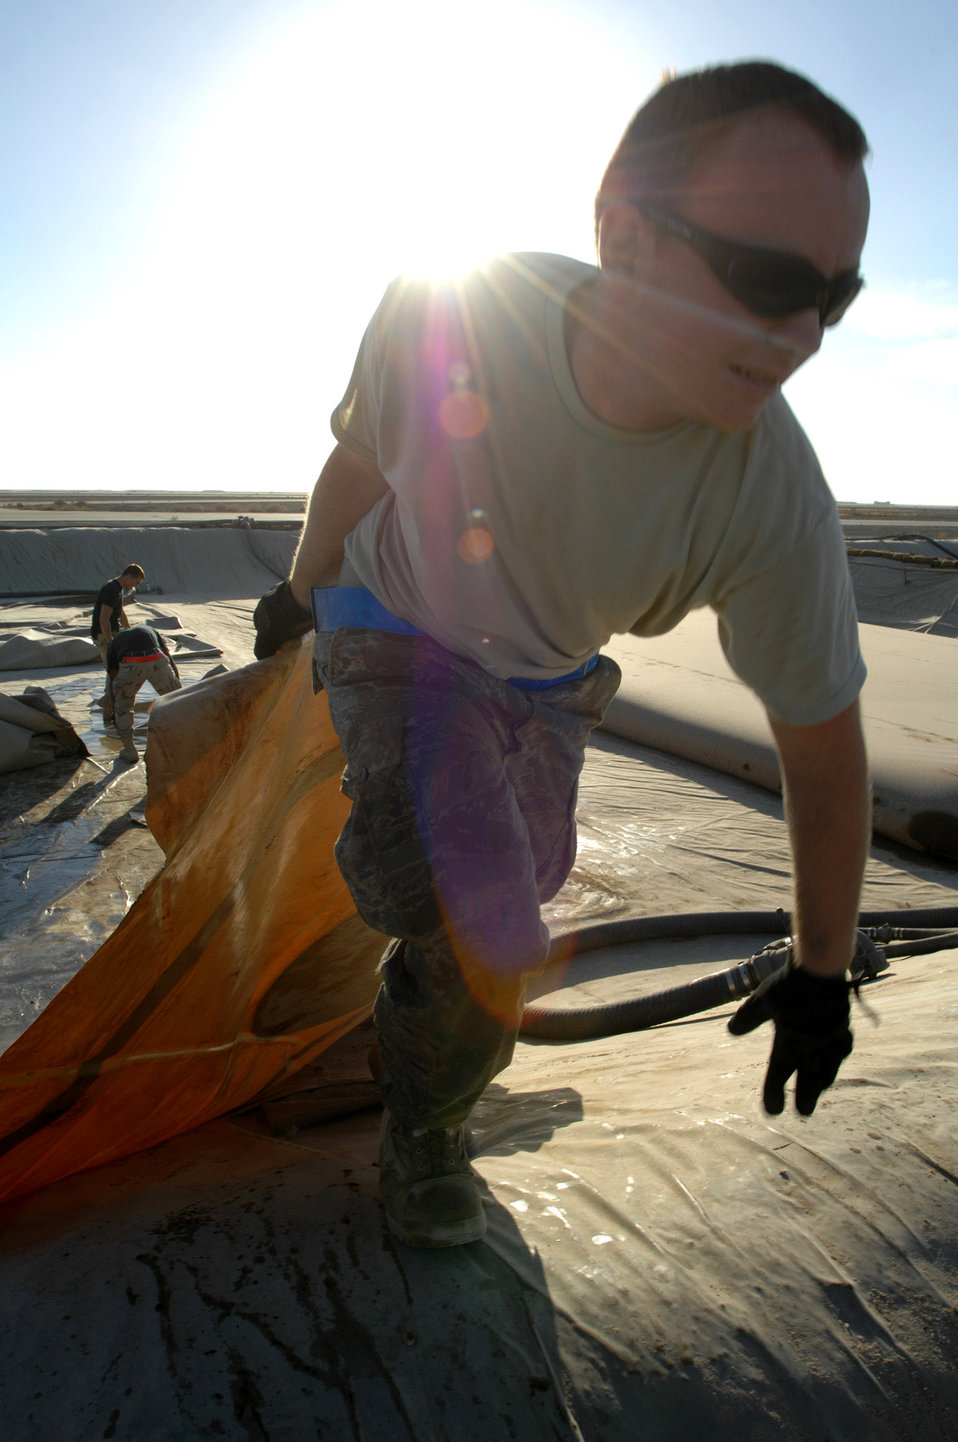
Completing a bladder transplant

Senior Airman Jay Pickle helps install a 900-pound fuel bladder Dec. 3 at Ali Base, Iraq. Airmen from the 407th Expeditionary Logistics Readiness Squadron fuels shop periodically replace fuel bladders to prevent ruptures. The new bladder can hold up to 50,000 gallons of fuel. Airman Pickle is deployed from Yokota Air Base, Japan.